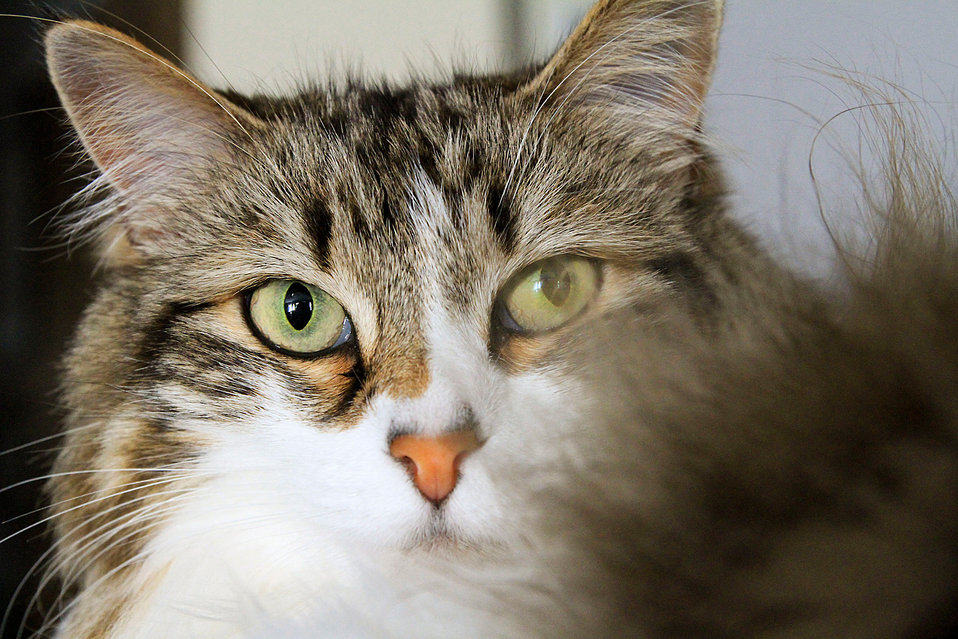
Annoyed cat

An angry cat from an angle.